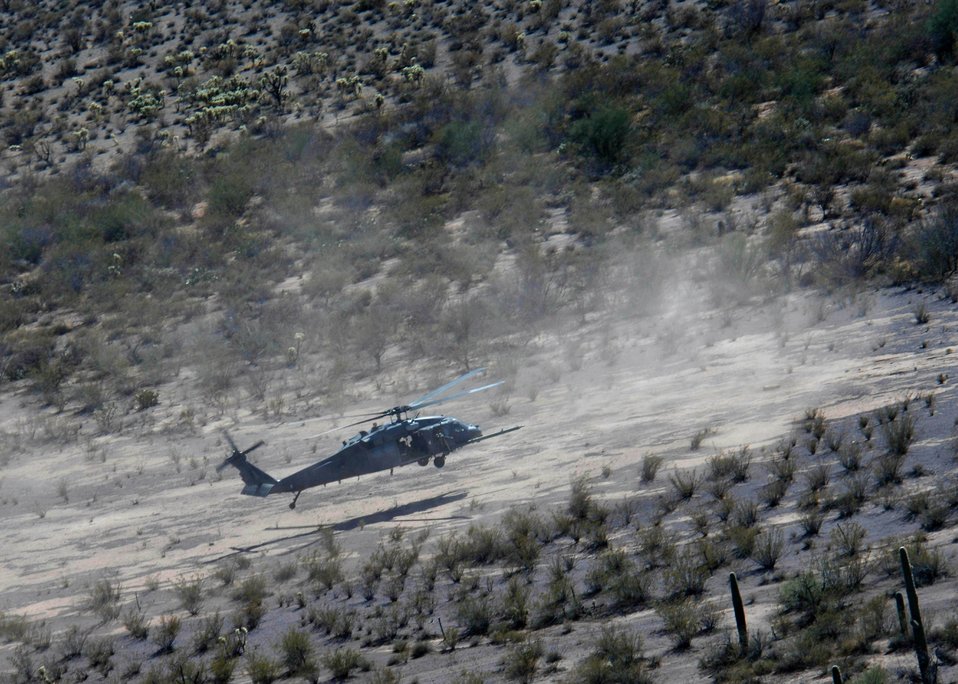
Insertion/extraction training

A HH-60 Pavehawk filled with pararescuemen from the 48th Rescue Squadron practice various types of training near Davis-Monthan Air Force Base, Ariz., Monday, March 13, 2006. Aircrews from the 55th Rescue Squadron and pararescuemen assigned to the 48th Rescue Squadron were conducting alternate insertion/extraction training.